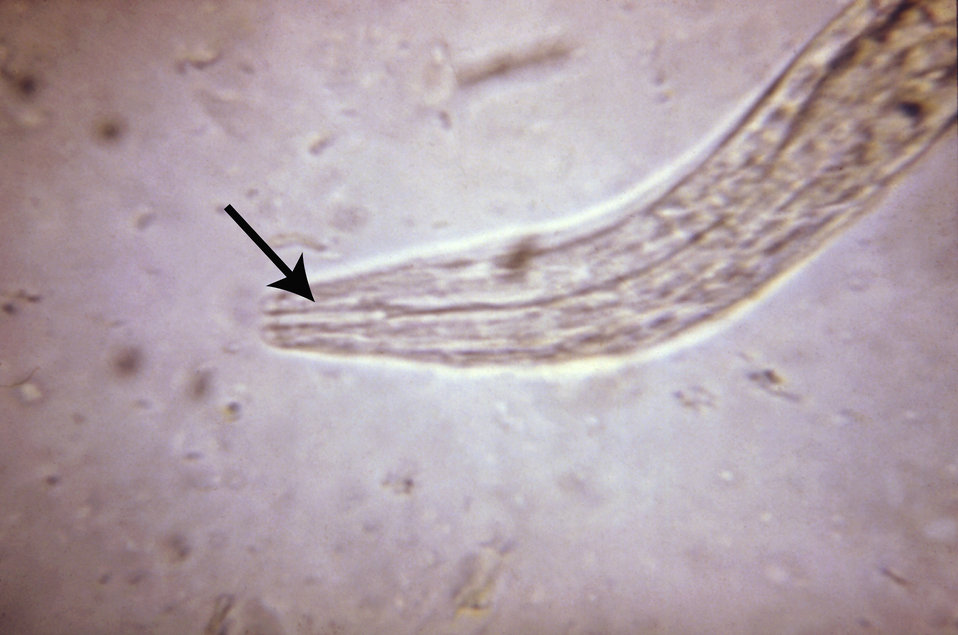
This micrograph depicts the buccal cavity morphology of a hookworm, during its rhabditiform, early noninfectious larval stage.